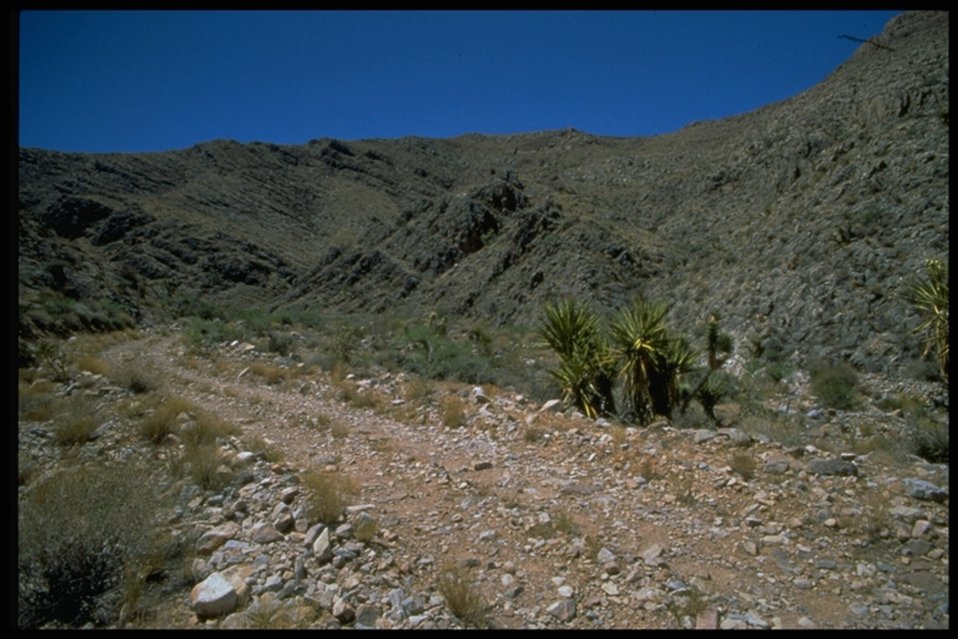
A road runs through this area of the Grand Canyon-Parashant National Monument.